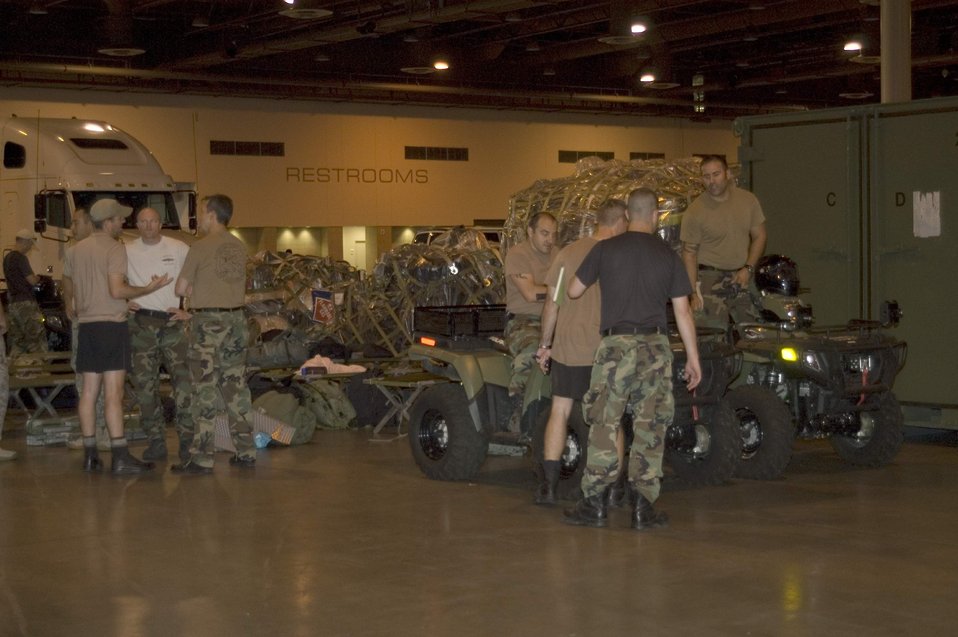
Special tactics unit arrives in Houston to aid Ike relief

Members of the Oregon Air National Guard's 125th Special Tactics Squadron prepare all-terrain vehicles and discuss operations Sept. 12 at the Reliant Center in Houston. Members of the 125th STS is one of many federal, state and local organizations staged at the center to support Hurricane Ike relief efforts.